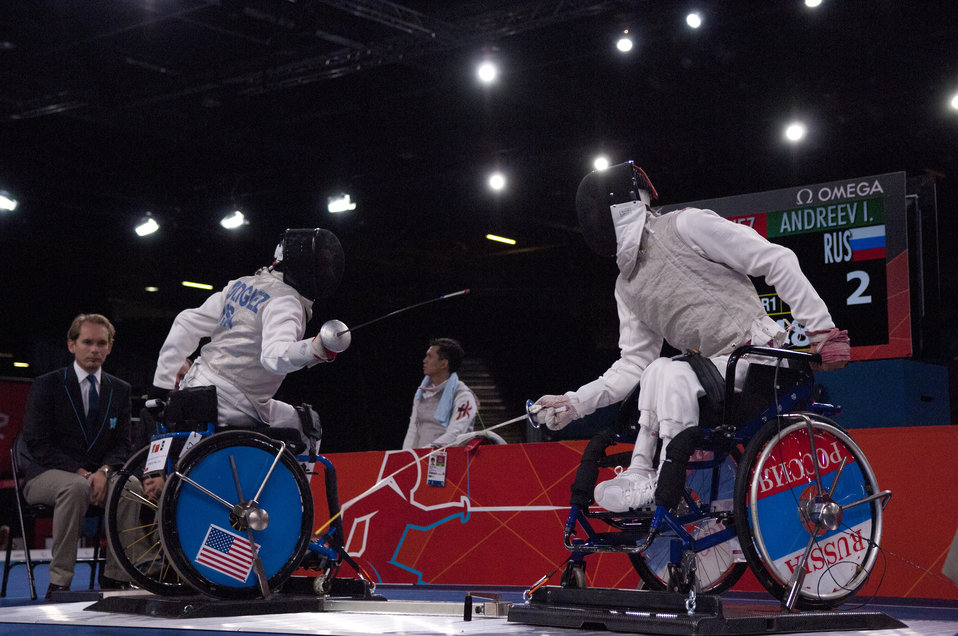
af veteran fencer

Former Air Force Staff Sgt. Mario Rodriguez, left, a member of the 2012 U.S. Paralympic fencing team, battles Russia's Ivan Andreev at London's ExCel Centre during the Paralympic Games, Sept. 4, 2012.